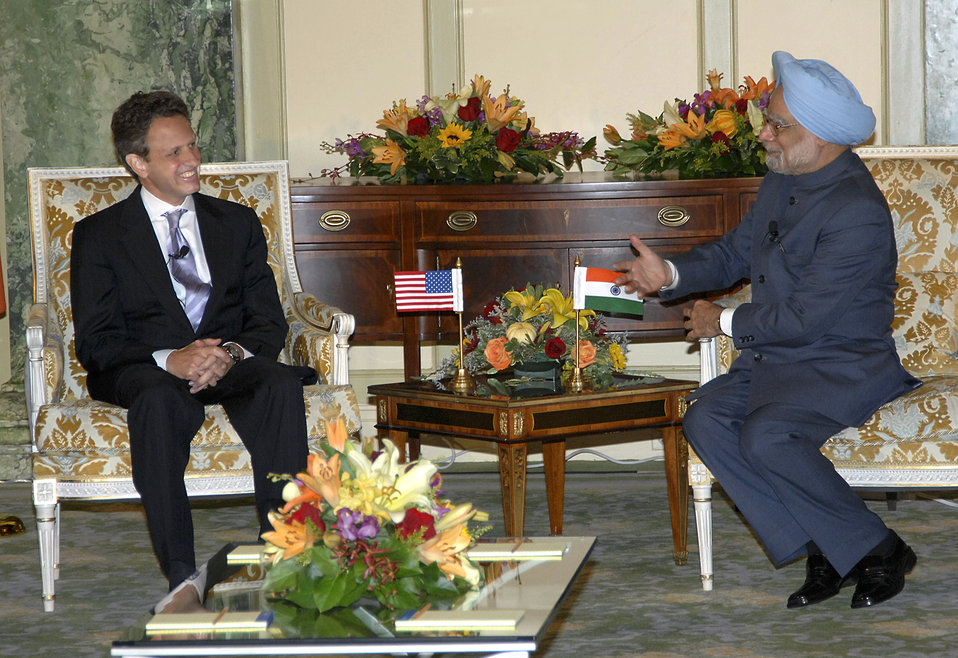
Prime Minister Singh of India

On November 25, 2009, Secretary Geithner participated in a bilateral meeting with Prime Minister Singh of India.